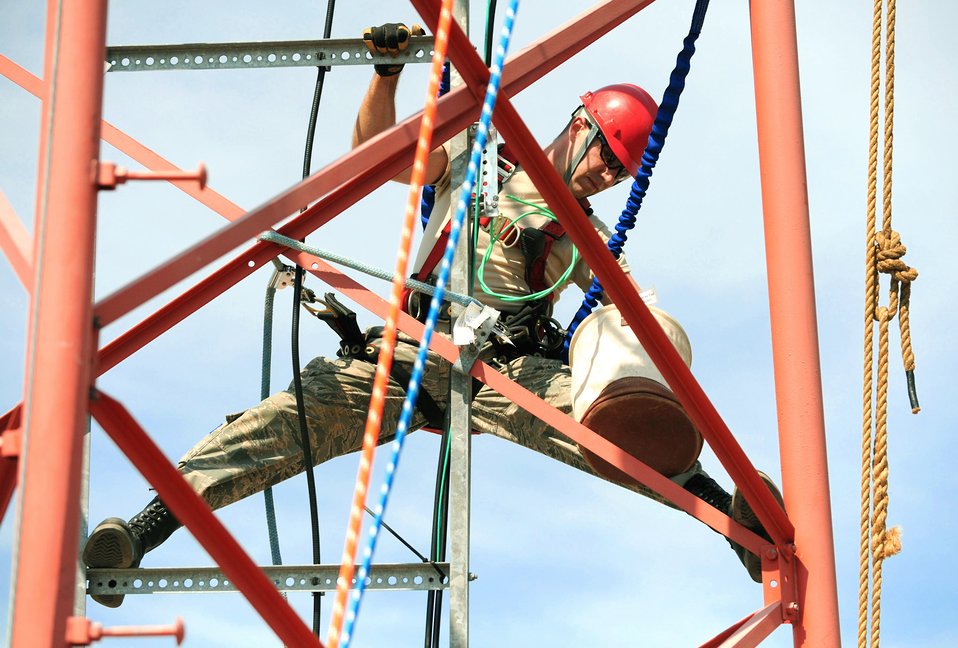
High wire balancing

An Airman balances on a communications tower July 22, 2010, while checking the wiring at F.S. Gabreski Air National Guard Base in Westhampton Beach, N.Y. He is assigned to the New York Air National Guard's 213th Engineering Installation Squadron at nearby Stewart ANGB in Newburgh.